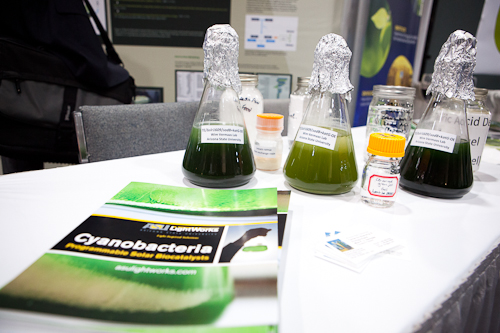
ASU's Cyanobacteria

If successful, the ASU project would develop a more efficient way to produce and incorporate biofuels into the existing transportation fuel infrastructure.